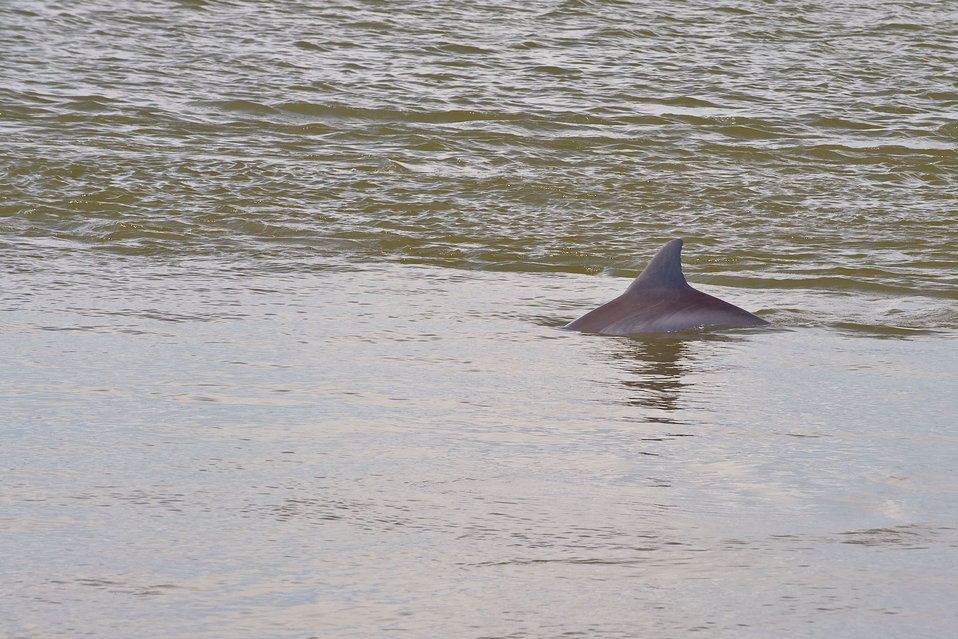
August 7, A positive glimpse amid the recovery effort